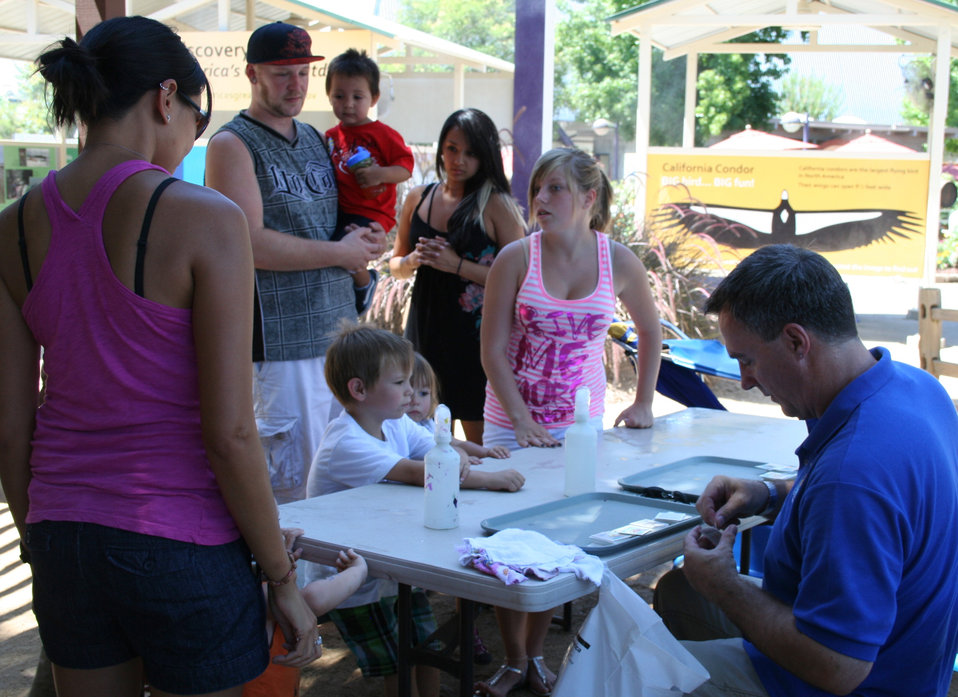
California State Fair Tattoo Area 2011

For the first time DOI agencies [US Fish and Wildlife Service, Bureau of Reclamation and Bureau of Land Management] joined together to host an America's Great Outdoors Booth at the California State Fair in Sacramento, Calif., July 14 - 31.

The booth included informational panels and displays as well as a children's activity area. Activities: wildlife masks, temporary tattoos, water-cycle bracelets, fish prints, touch boxes, scat bingo, a green-screen, coloring and bird bingo. Five days a week live raptors, snakes and bats were brought in.

About 50,000 children visitied the booth during the 18-day fair.